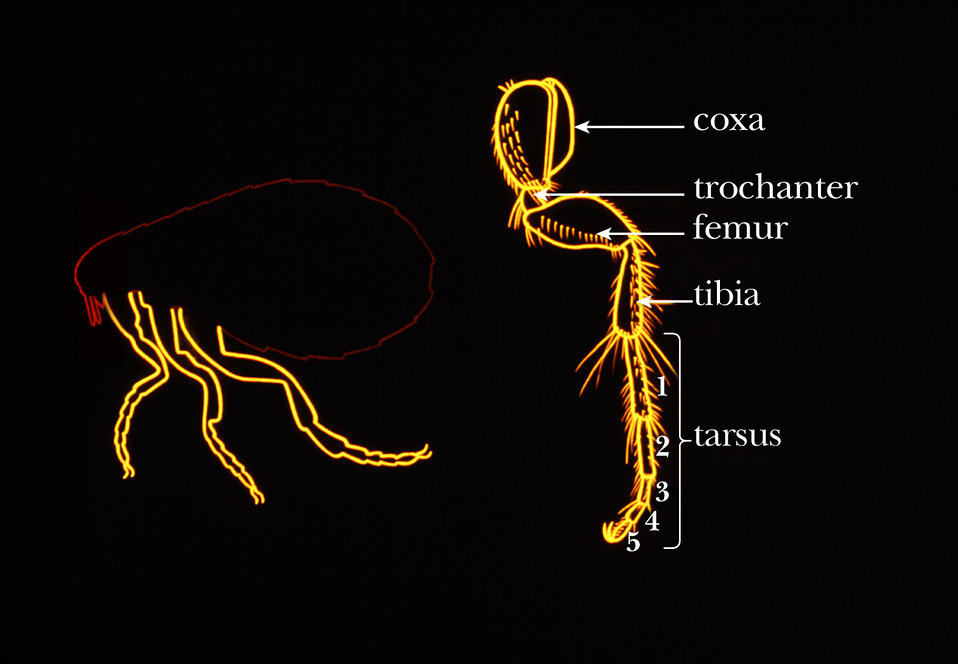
This illustration shows some of the identifying morphologic characteristics of a flea's arthropodal six legs.